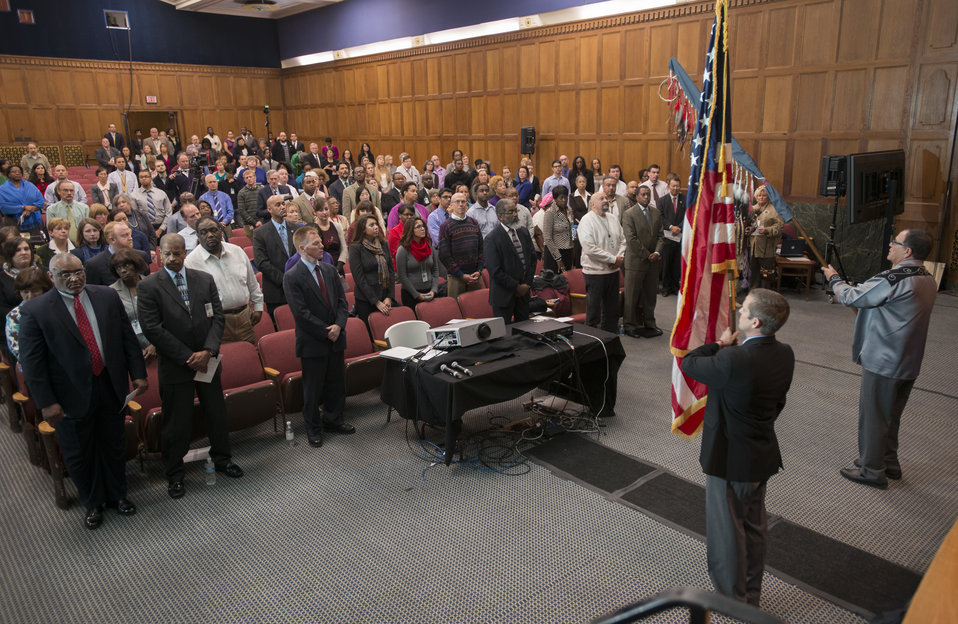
The Colors are presented at the 2013 American Indian and Alaska Native Heritage Observance at the U.S. Department of Agriculture (USDA) on Thursday, Nov. 14, 2013 in Washington, D.C. The theme of this year’s event was 'Guiding Our Destiny with Heritage and Traditions.'